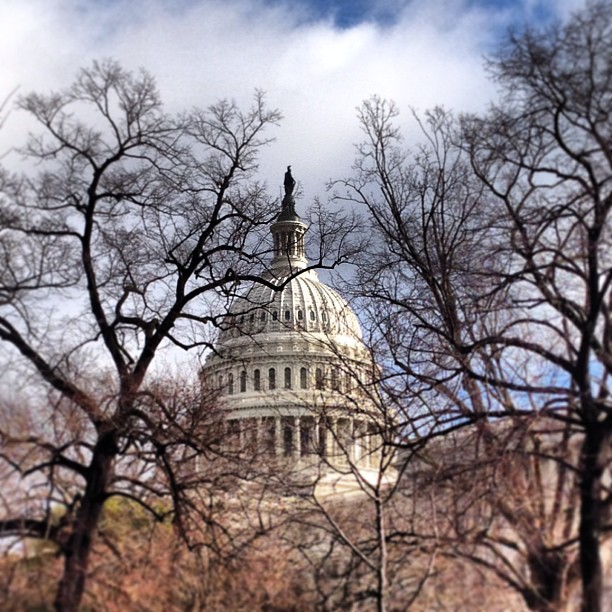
Morning of historic day at Capitol. Rosa Parks statue unveiling today 11 am.